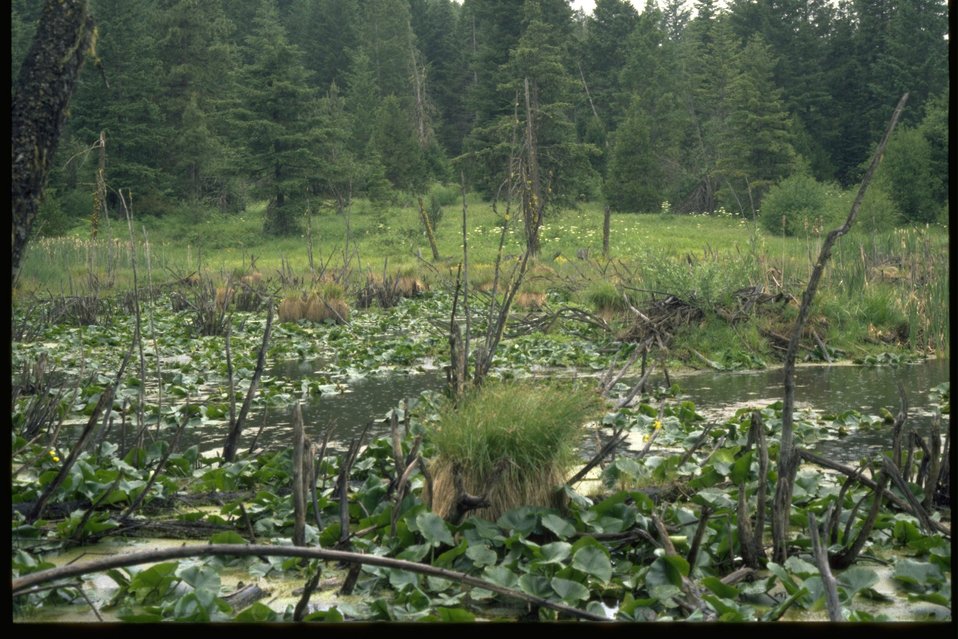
Parsnip Lake's beaver pond.